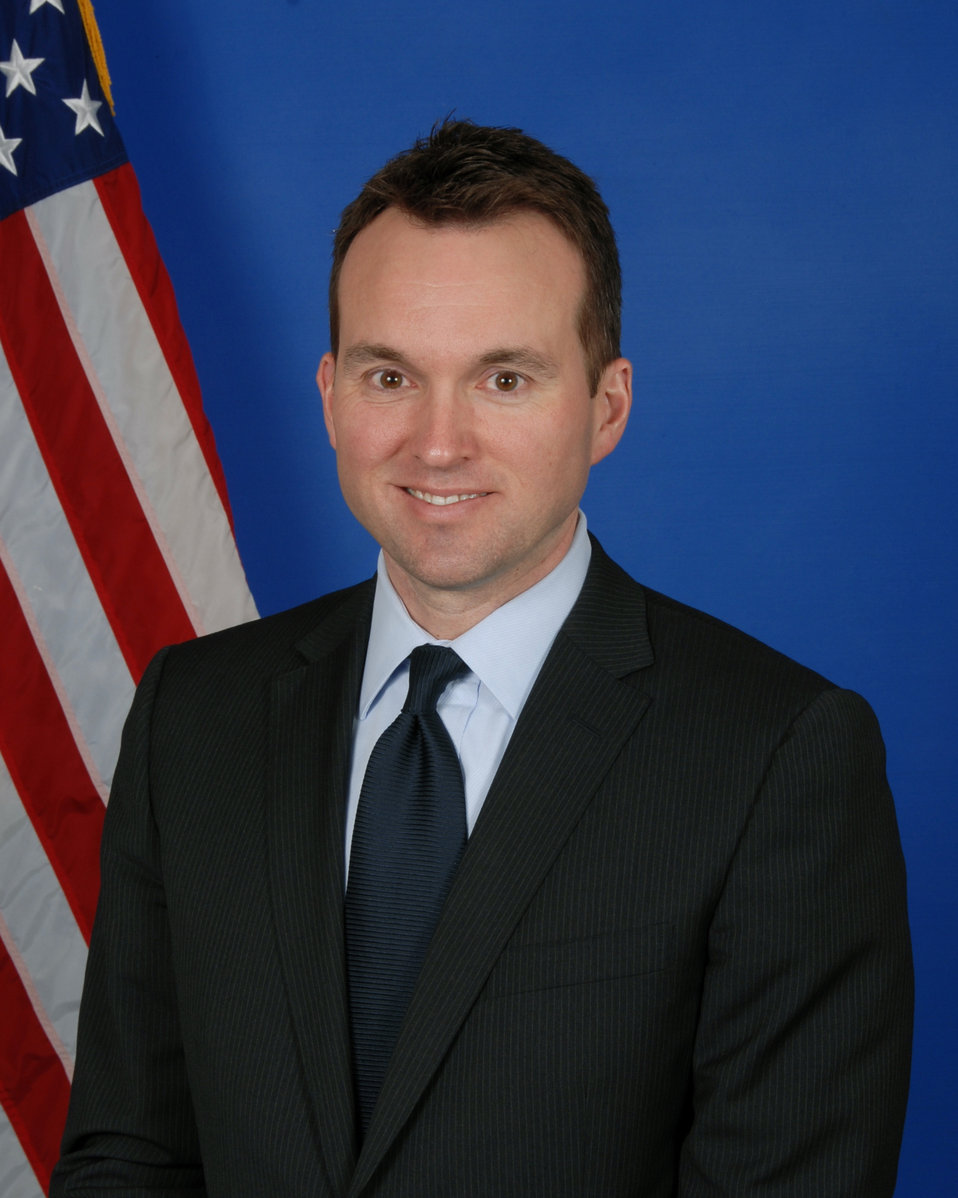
Under Secretary of the Air Force

President Barack Obama announced Aug. 1 that he intends to nominate Eric Fanning, seen here in his official photograph, to be the next Under Secretary of the Air Force. Fanning is the Deputy Under Secretary and Deputy Chief Management Officer of the Department of the Navy, previously holding positions with the House Armed Services Committee, the White House, CBS News, the Commission on the Prevention of Weapons of Mass Destruction
Proliferation and Terrorism, Business Executives for National Security, and
the Office of the Secretary of Defense.